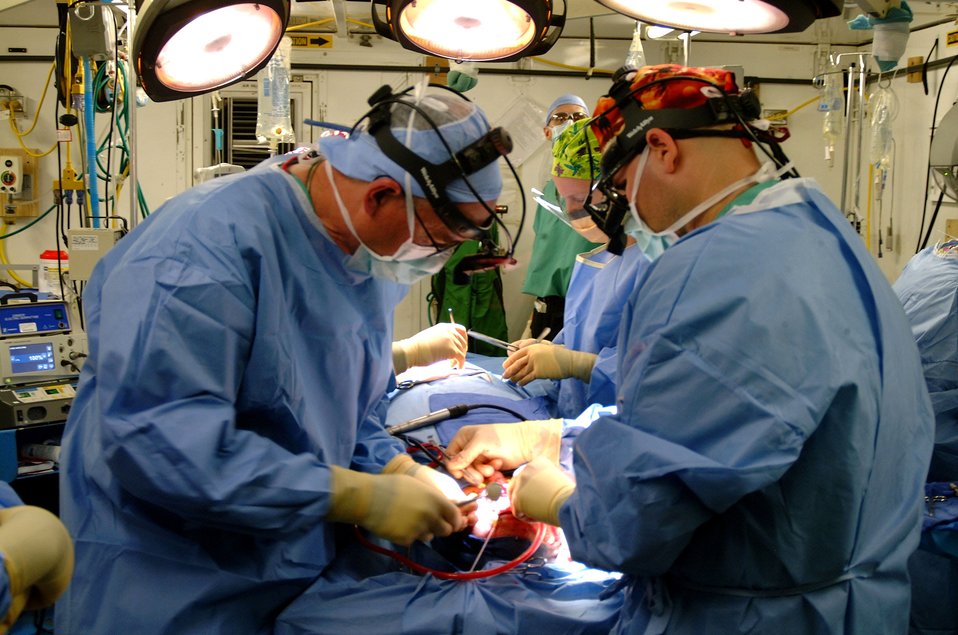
Medics aid wounded at Balad

Doctors operate on an alleged Iraqi insurgent at the Air Force Theater Hospital at Balad Air Base, Iraq, on Thursday, April 27, 2006.